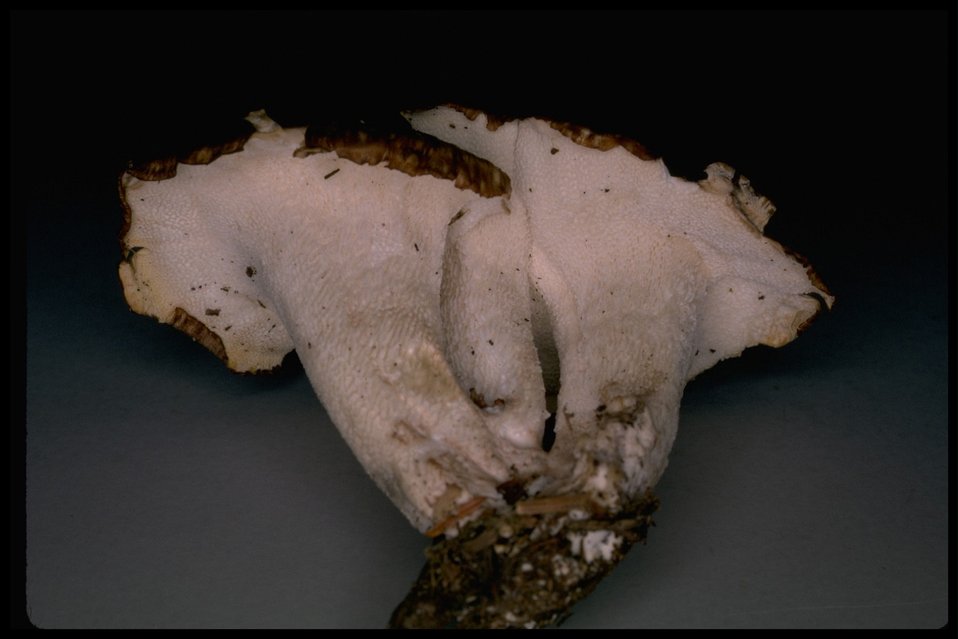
ç